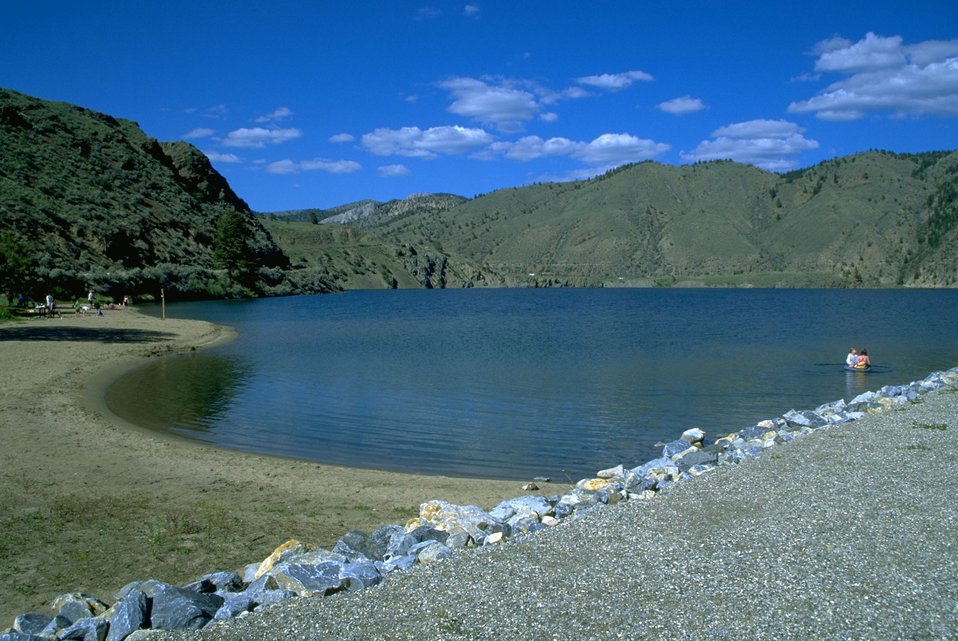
Scenic view of Hauser Lake